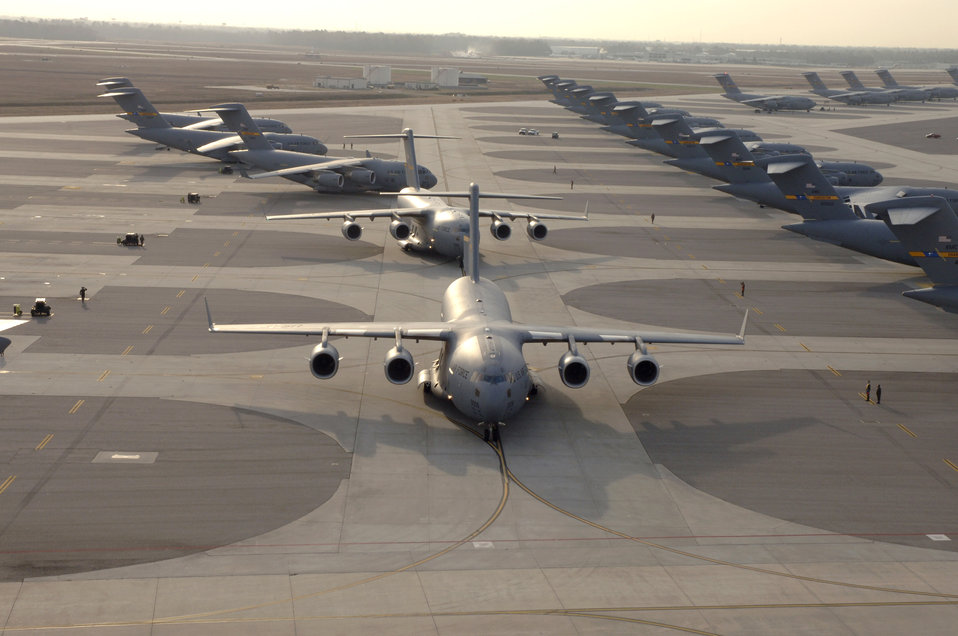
Globemasters galore

A line of C-17 Globemaster III's prepare to taxi Dec. 21 at Charleston Air Force Base, S.C. The C-17 is capable of rapid, strategic delivery of troops and all types of cargo. The design of the aircraft allows it to operate on small, austere airfields. It can take off and land on runways as short as 3,500 feet and 90 feet wide.